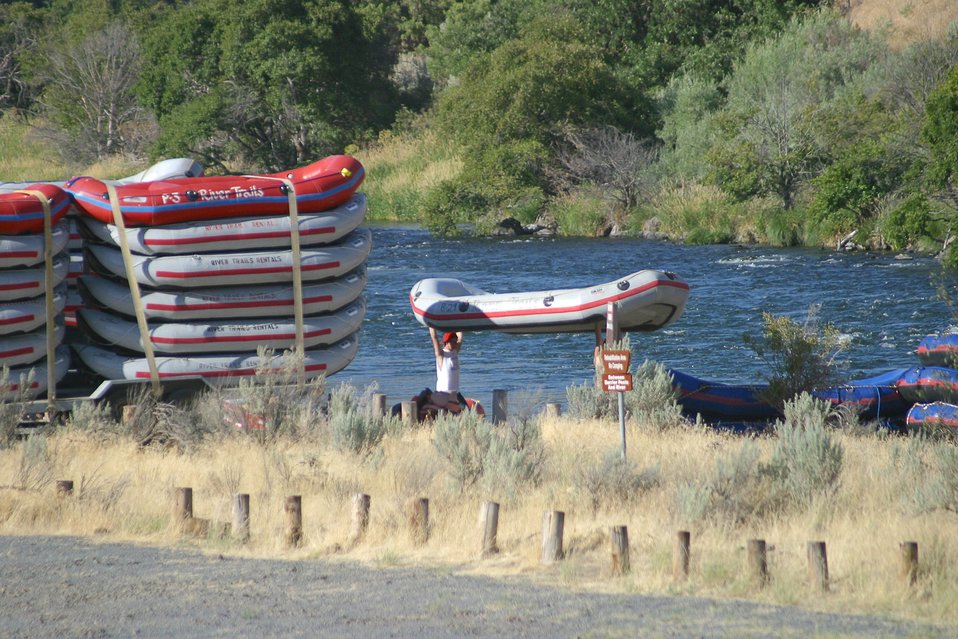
Commercial Raft companies arrive early at Harpham Flat boat ramp to prepare their clients.